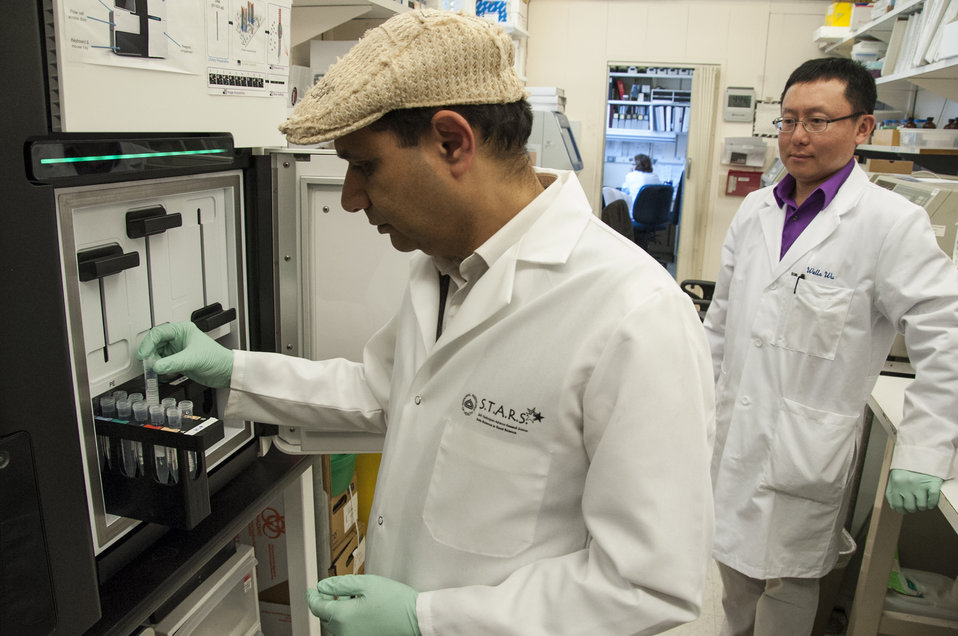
Bio Threats: FDA's A-Team (6329)

Zuben Sauna, Ph.D., (left) principal investigator in CBER’s hemostasis laboratory, and chemist Wells Wu, Ph.D., are exploring the shapes of proteins used in medical treatments to determine why they prompt a strong reaction from the body’s immune system. Suspecting that the shapes may be part of the problem, the researchers are using tiny pieces of DNA-like molecules called aptamers to probe the proteins. Hemostasis is the process of getting bleeding to stop and the antibodies that cling to these proteins are causing life-threatening complications, particularly in the treatment of bleeding disorders.

Scientists at FDA’s Center for Biologics Evaluation and Research (CBER) work to facilitate the development of safe, effective treatments that would neutralize biological threats to public health and security. CBER regulates preventive and therapeutic vaccines, blood and blood products, human cell and tissue-based products, gene therapies and xenotransplantation. To learn more, read this FDA Consumer Update:

• FDA Teams Prepare for Biological Threats